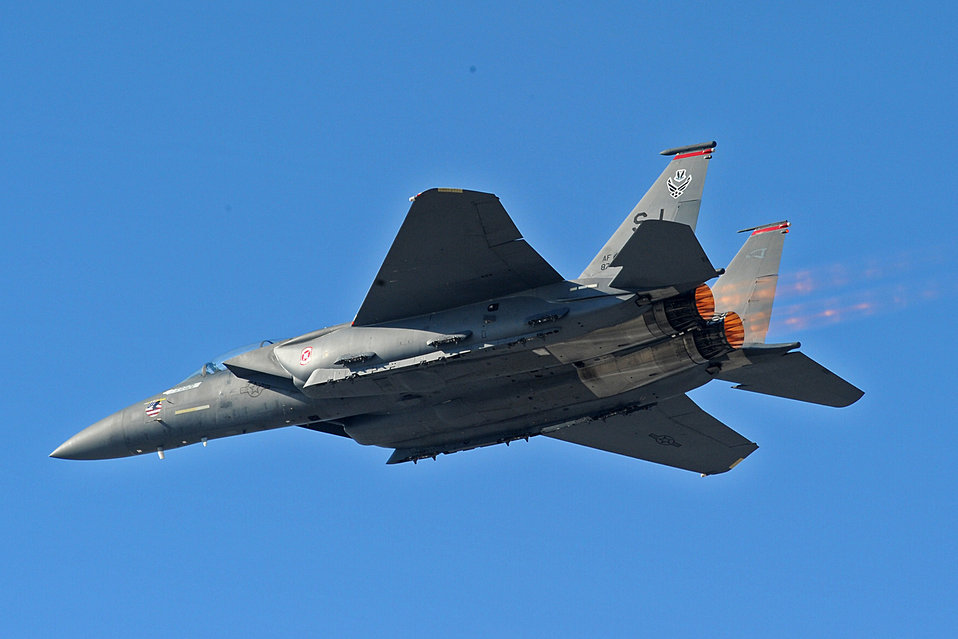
Demo teams receive 2010 certification

Maj. Mike Maeder and Capt. Heron Weidner perform for Gen. William M. Fraser III Feb. 3, 2010, at Langley Air Force Base. Major Maeder and Captain Weidner are F-15E Strike Eagle demonstration team pilots and General Fraser is the commander of the Air Combat Command.